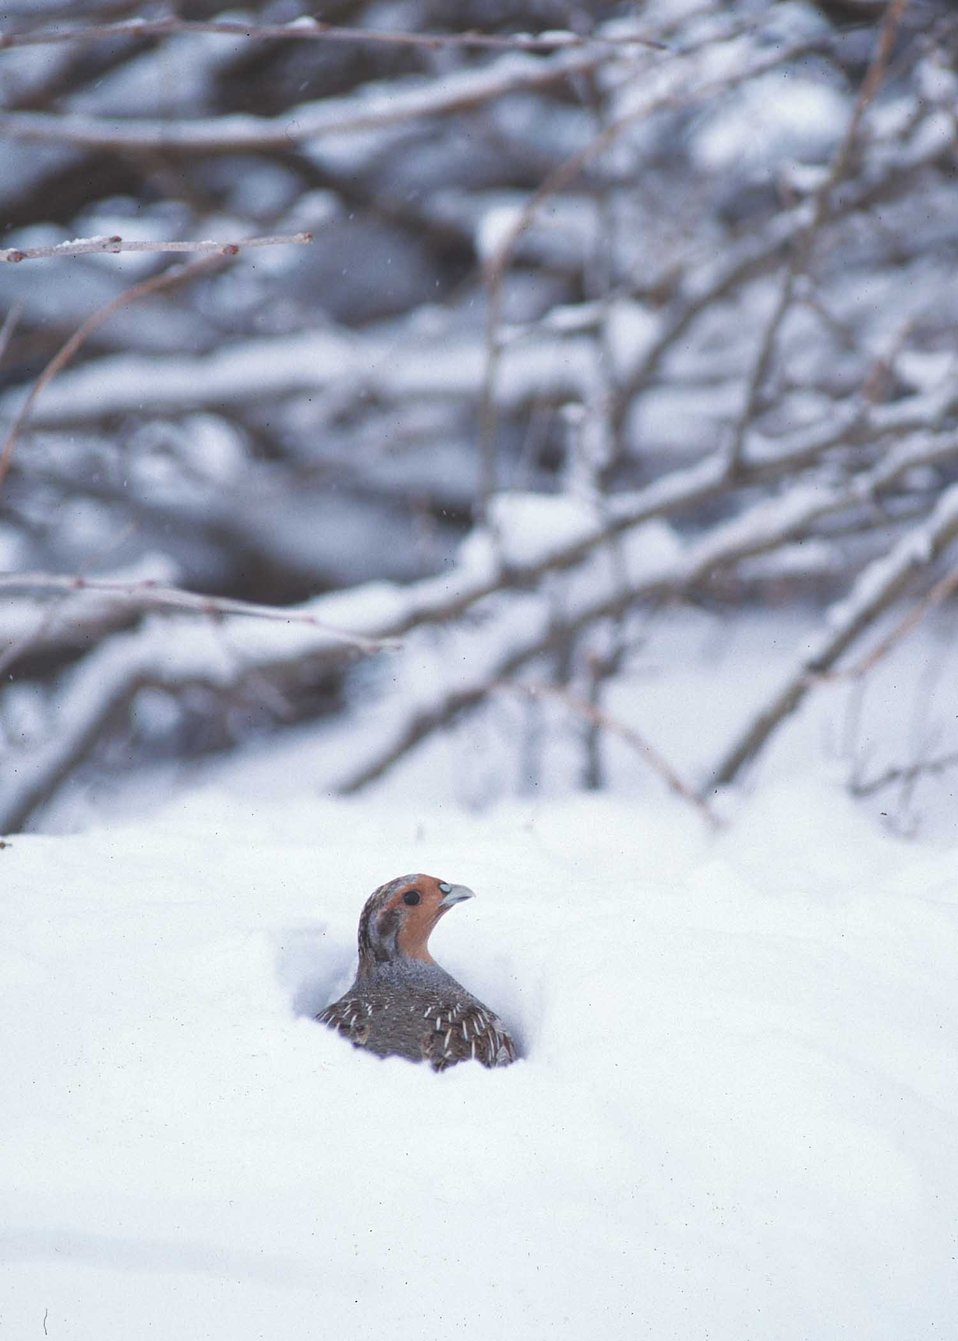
A riparian buffer provides shelter and other habitat for wildlife along Bear Creek in central Iowa.